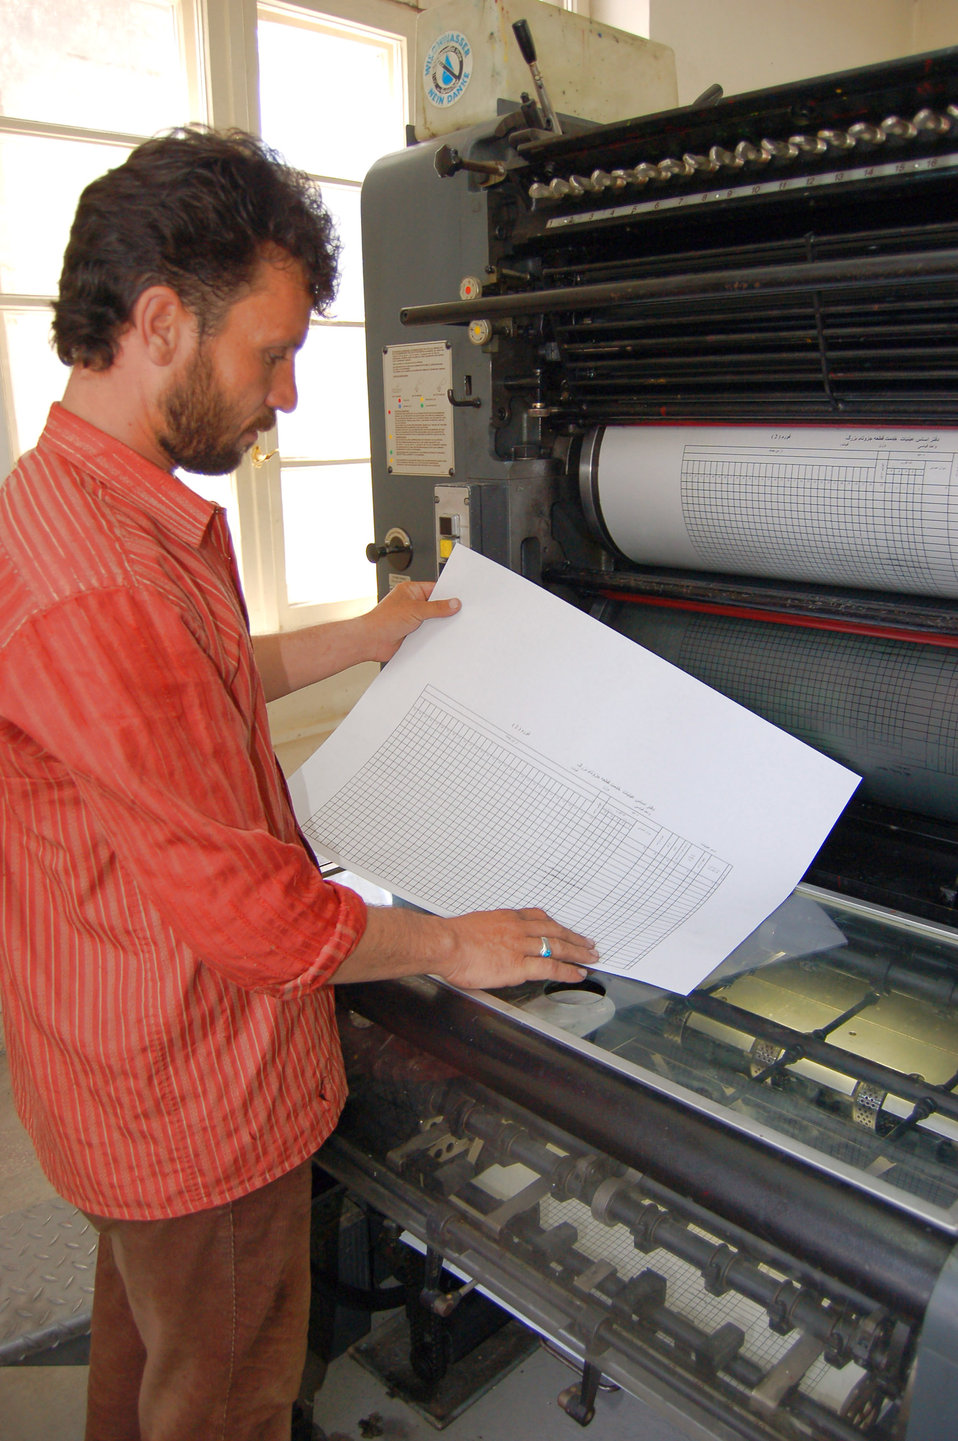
ANA print plant supports mission, training

An Afghan National Army civilian inspects a product made at the ANA print plant in Kabul, Afghanistan. During an average week, the plant produces more than 75,000 products used for training, recruitment and logistical support.